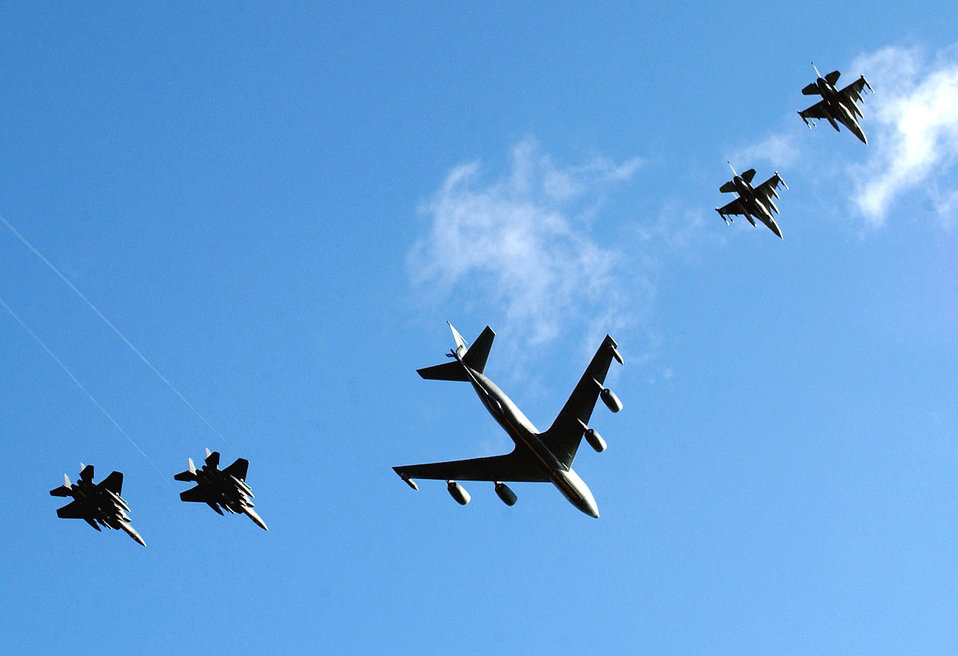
Target run

ROYAL AIR FORCE MILDENHALL, England -- A KC-135R Stratotanker accompanies two F-16 Fighting Falcons and two F-15E Strike Eagles to a simulated target.